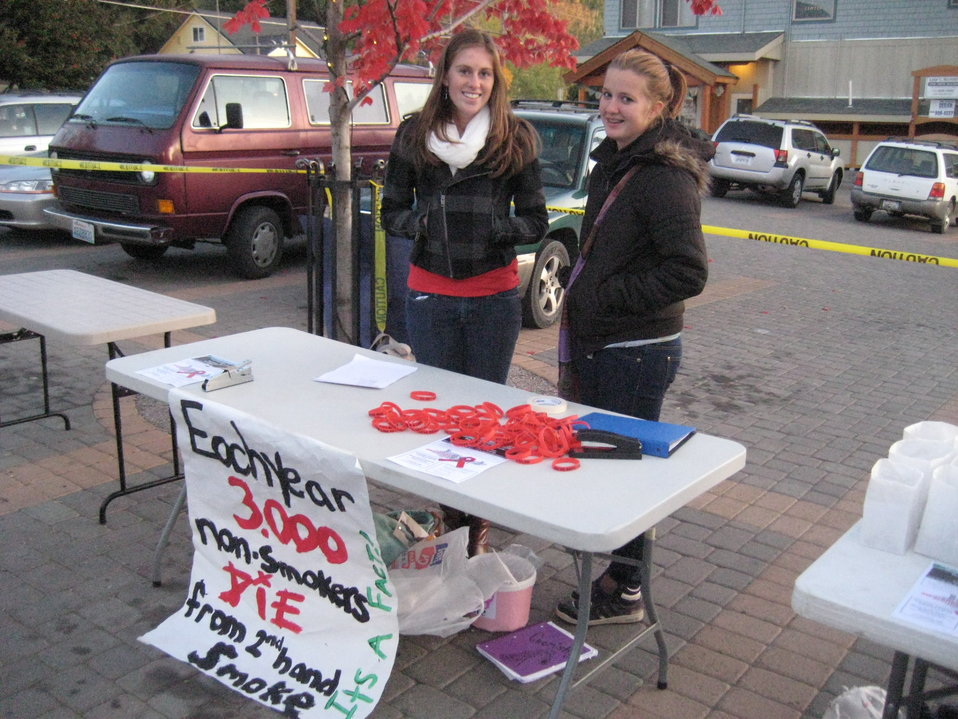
Siskiyou County Drug Facts Week Event

Two students work the table at a memorial event organized by the Leadership Class at Mt. Shasta High School for NDFW. The purpose was to recognize and highlight people who have lost their lives due to drug abuse.